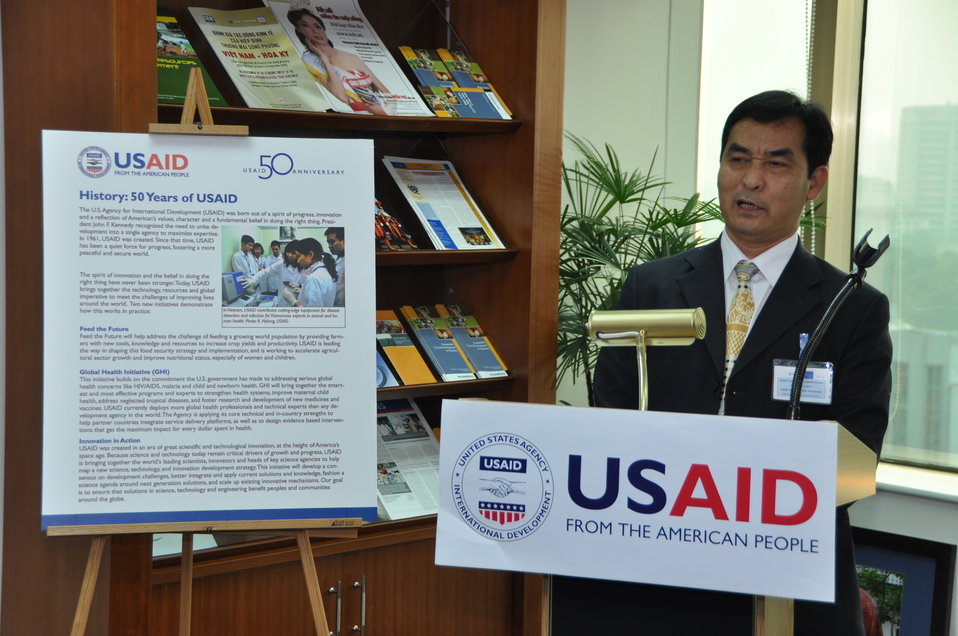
USAID Vietnam Open House, November 3, 2011